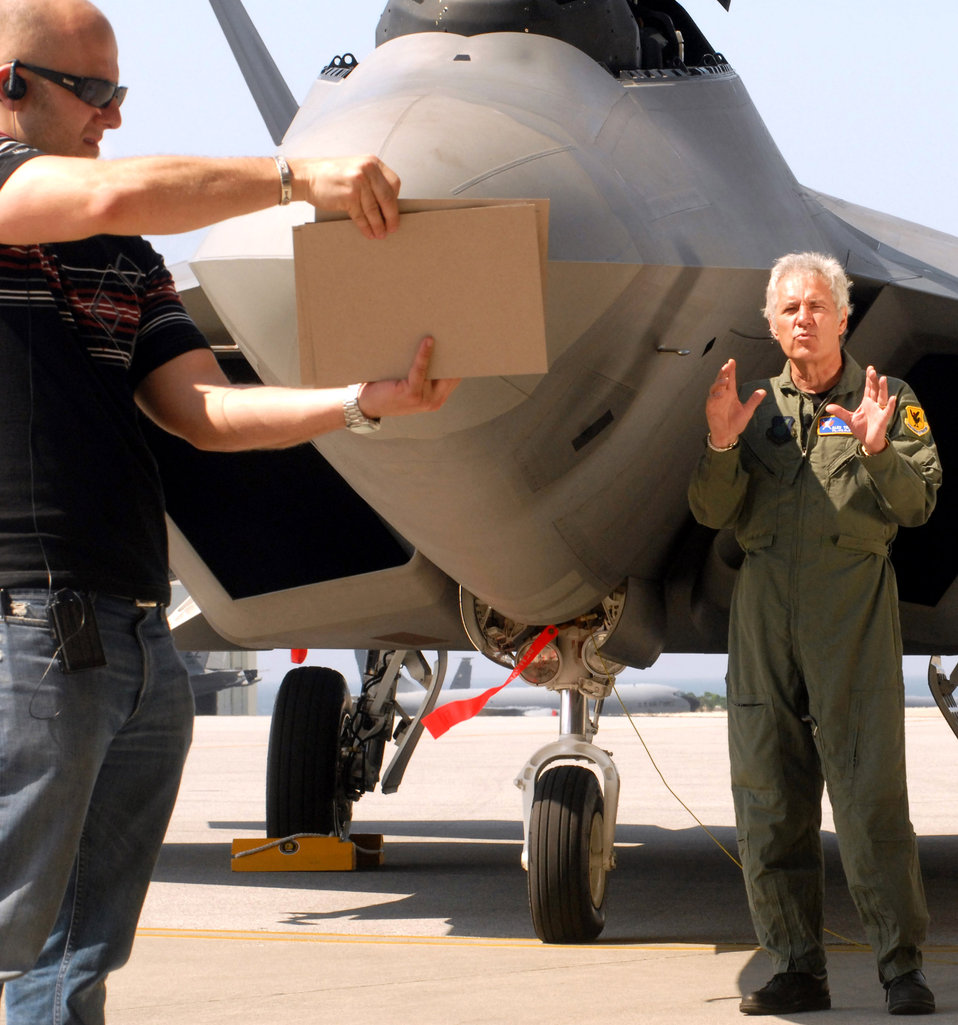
Kadena Airmen shine on 'Jeopardy!'

Alex Trebek films a